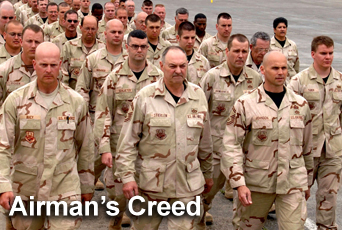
Airman's Creed

The Air Force chief of staff introduced the new